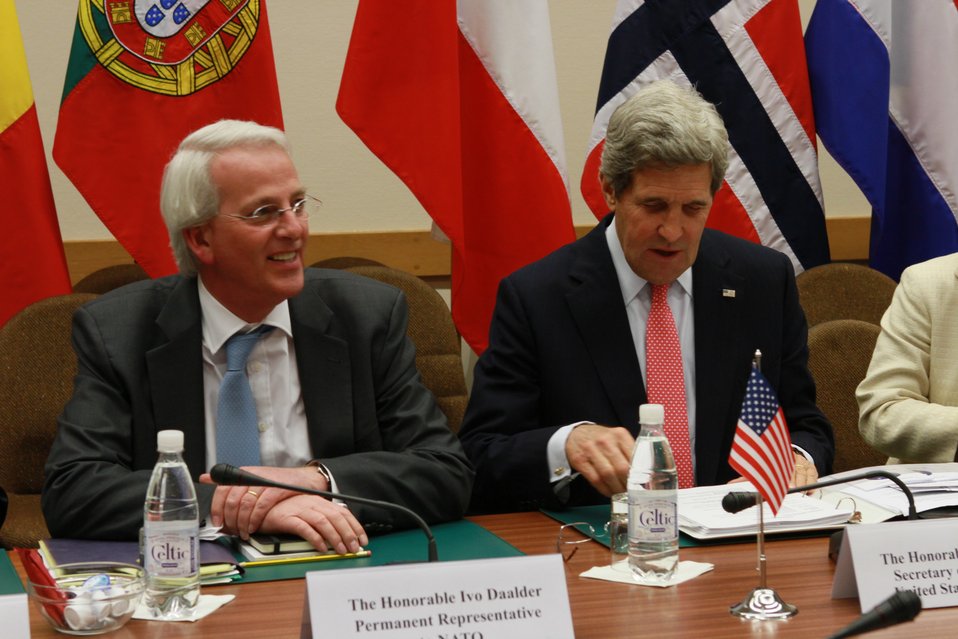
Secretary Kerry and Ambassador Daalder Prepare For Bilateral Meeting

U.S. Secretary of State John Kerry and U.S. Ambassador to NATO Ivo Daalder prepare for a bilateral meeting at the NATO Foreign Ministerial in Brussels, Belgium, on April 23, 2013.